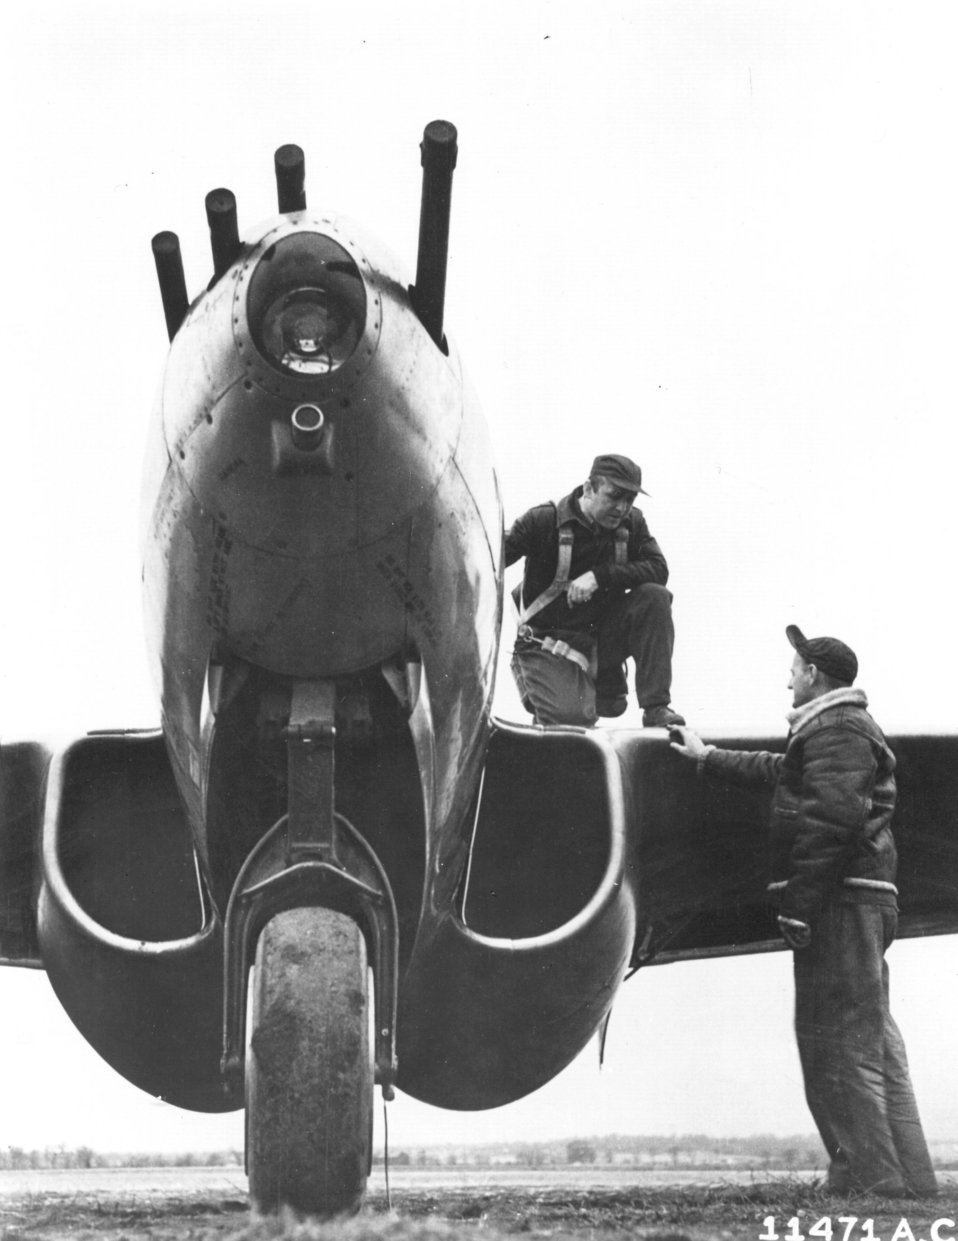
P-59 Airacomet

1940's -- Development of the P-59